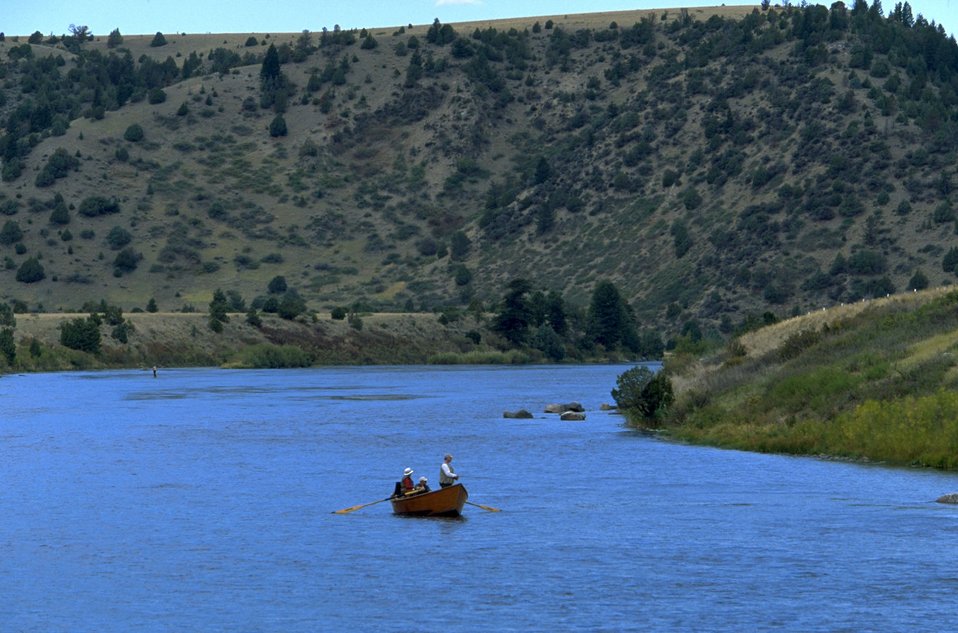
Fishing on the Madison River